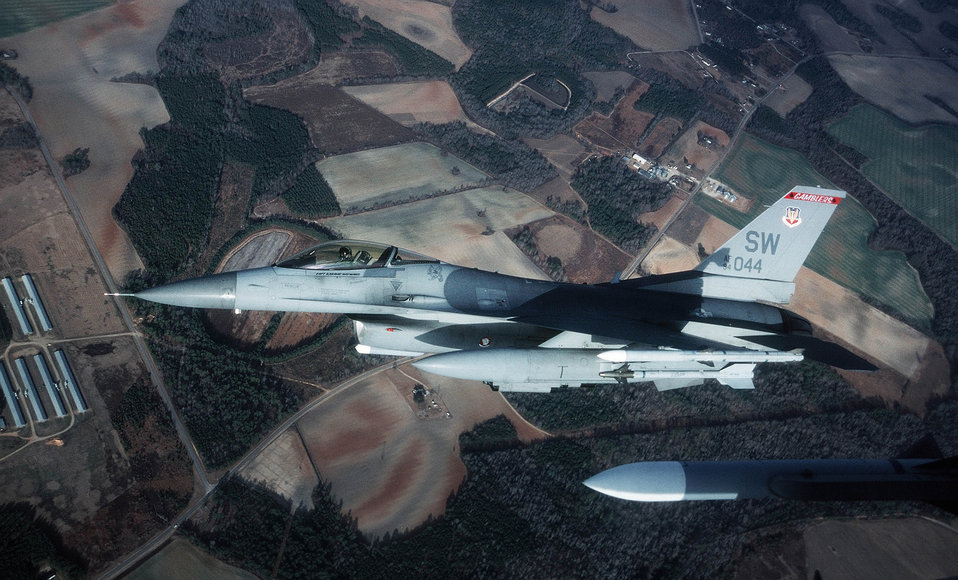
Bank right

OVER SOUTH CAROLINA -- An F-16CJ of the 77th Fighter Squadron banks right while flying a training mission. The aircraft is assigned to the 20th Fighter Wing at Shaw Air Force Base, S.C.